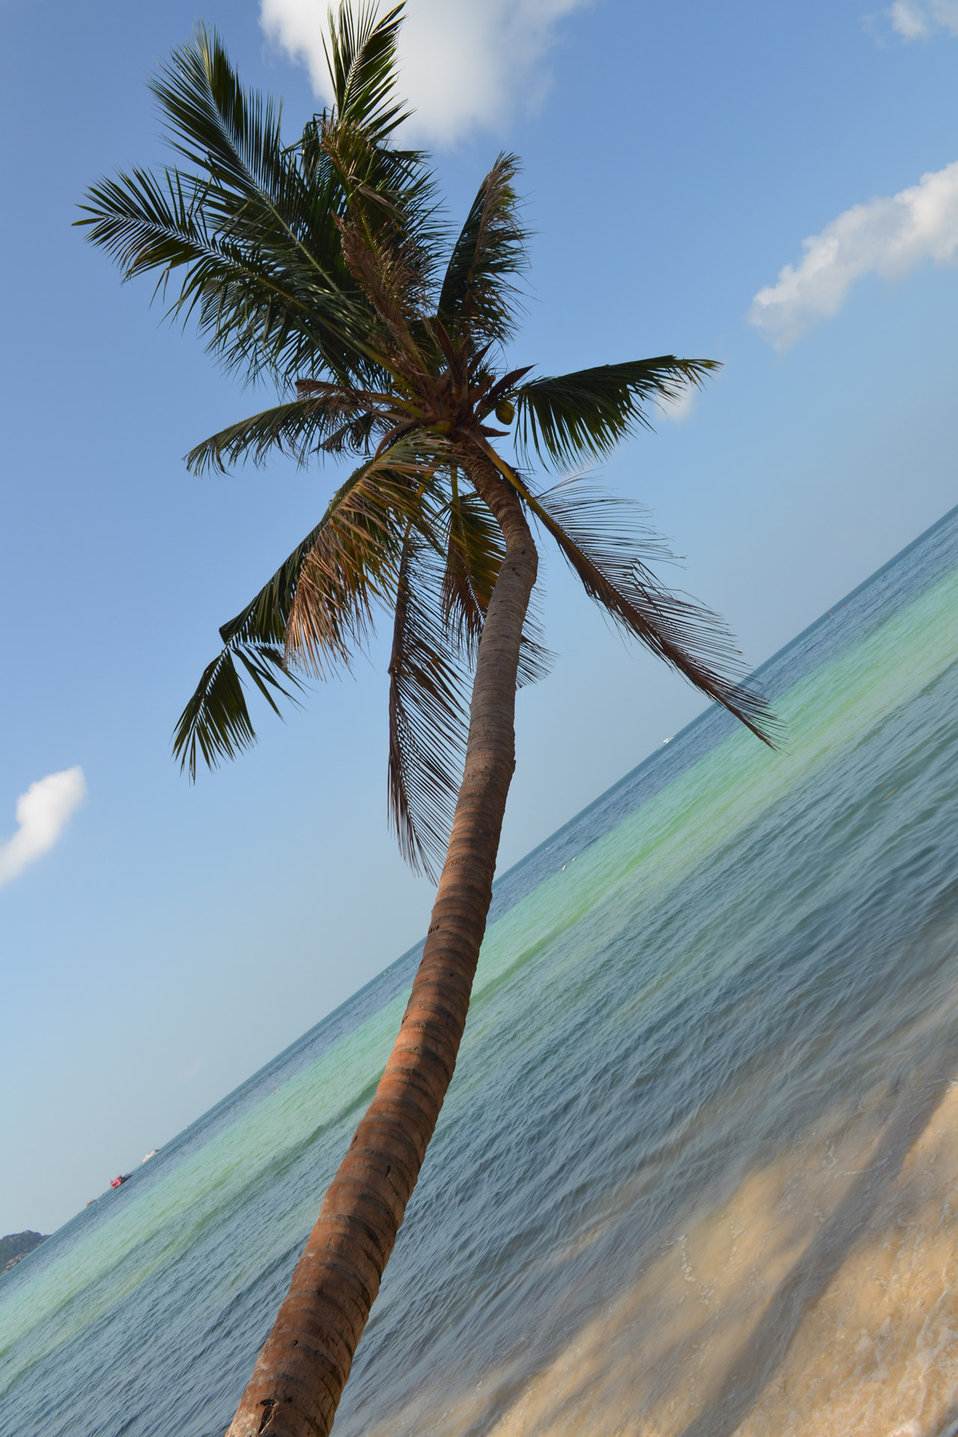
Coconut tree.